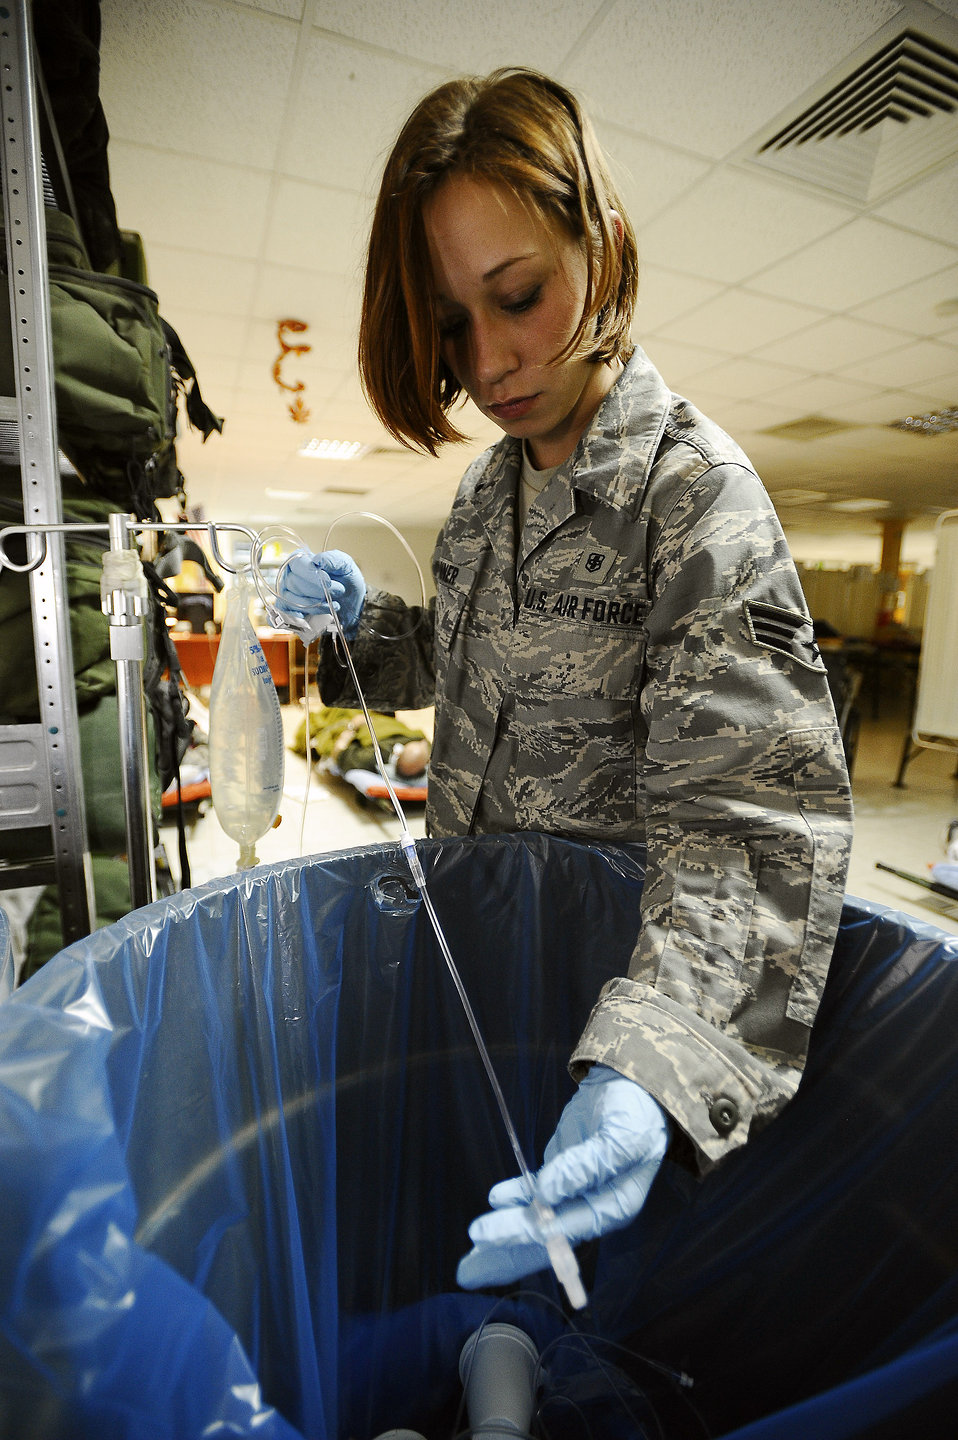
Warrior care

Senior Airman Samantha Brunner flushes air out of intravenous tubing Nov. 27 at the Contingency Aeromedical Staging Facility on Joint Base Balad, Iraq. Occlusions, or air bubbles, can enter a patient's vein and cause cardiac arrest. Airman Brunner, an aerospace medical service journeyman with the 332nd Expeditionary Aerospace Medical Squadron and native of Washington, Pa., is deployed from the 911th Airlift Wing at Pittsburgh International Airport Air Reserve Station, Pa. Her hometown is Washington, Pa.